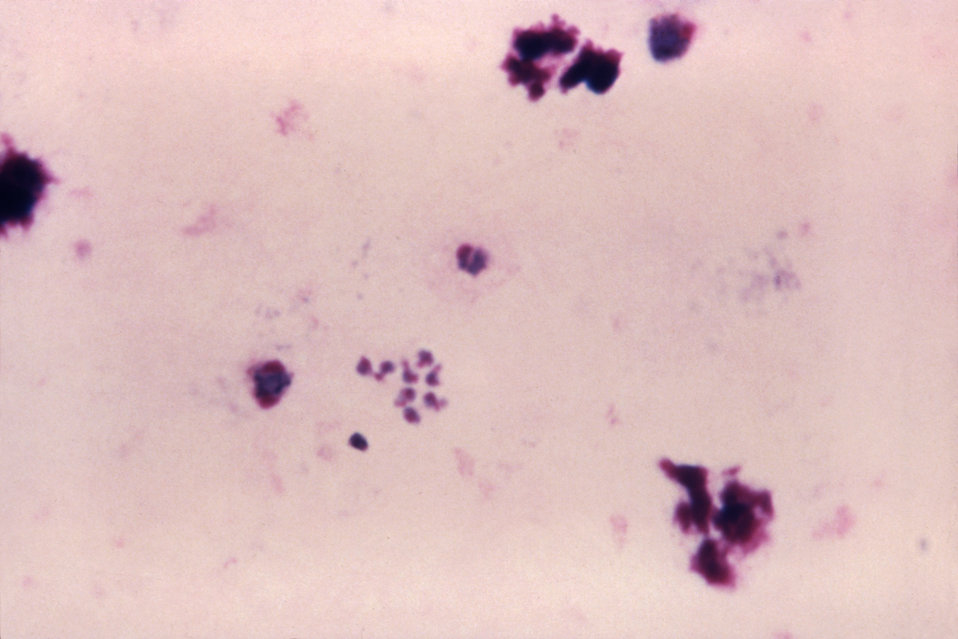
This thick film blood smear micrograph depicts various stages of Plasmodium ovale schizonts and merozoites.